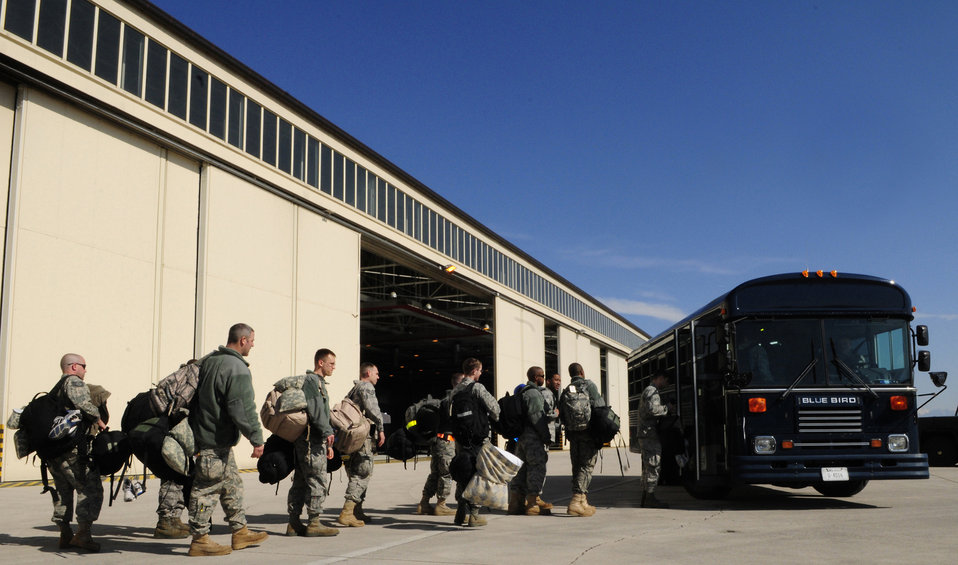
Odyssey Dawn

Airmen arriving to Aviano Air Base, Italy from Spangdahlem Air Base, Germany and Royal Air Force Lakenheath, U.K. March 21, 2011 get onto a bus to be transported to lodging. The Airmen are on temporary duty to Aviano in support of Operation Odyssey Dawn. Joint Task Force Odyssey Dawn is the U.S. Africa Command task force established to support the larger international response to the unrest in Libya. A broad coalition of nations are partnering to enforce U.N. Security Council Resolution (UNSCR) 1973, which authorizes all necessary means to protect civilians in Libya under threat of attack by Qadhafi regime forces. JTF Odyssey Dawn is commanded by Admiral Samuel J. Locklear, III.